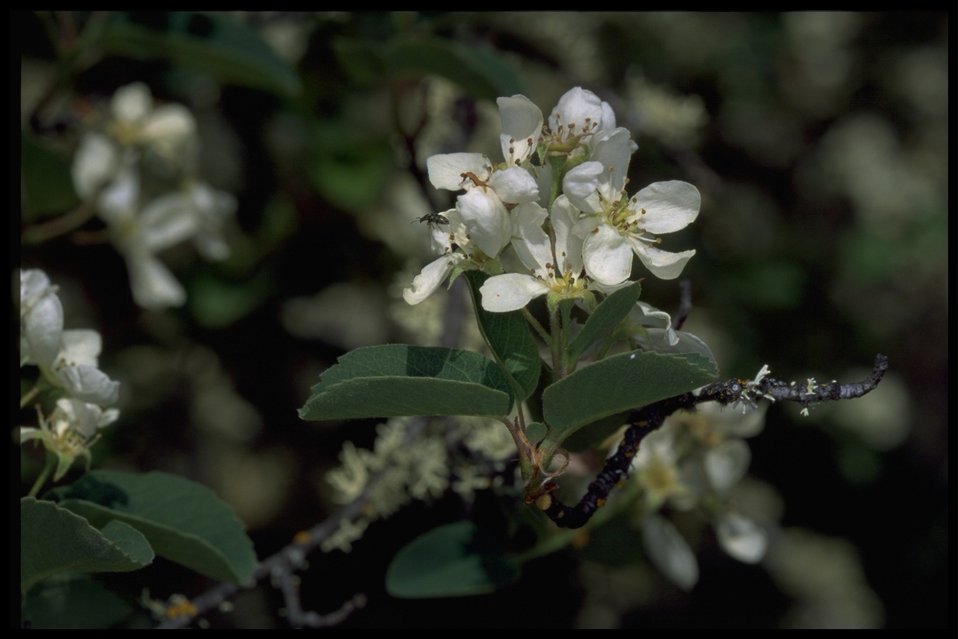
Closeup shot of service berry, Amelanchier alnifolia.